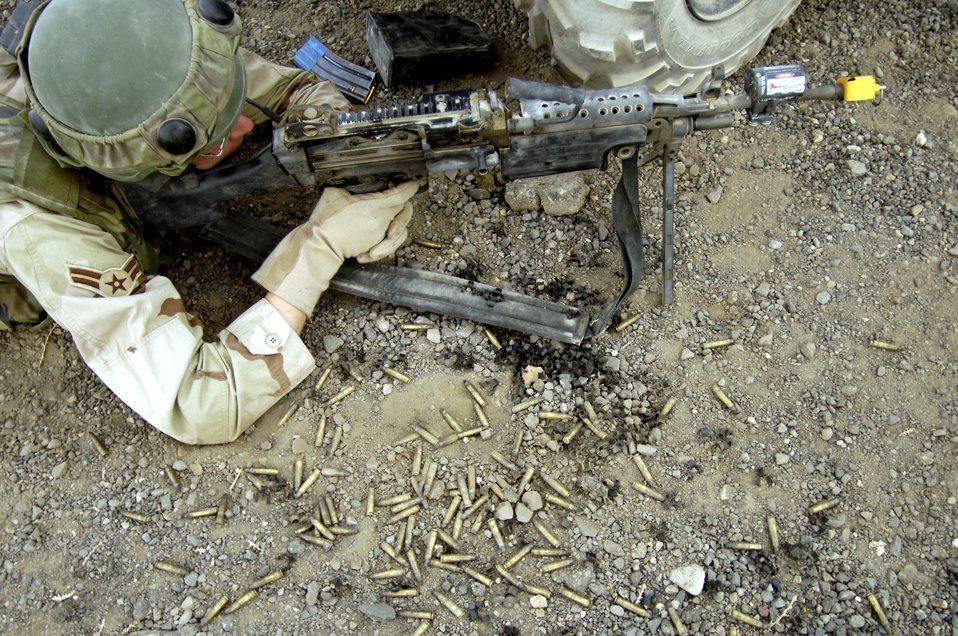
Lightning Fury

A security forces Airman